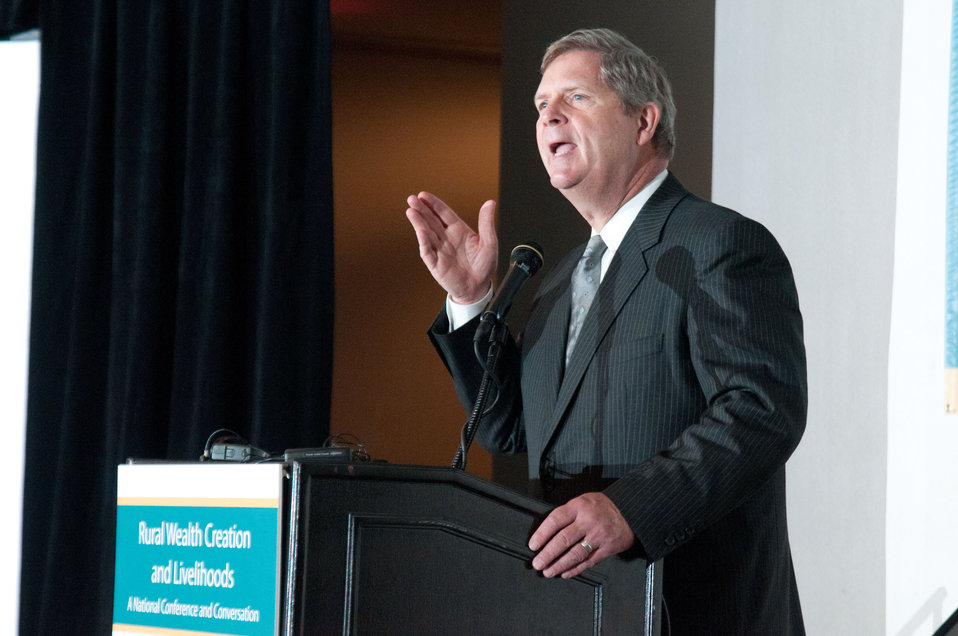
U.S. Department of Agriculture (USDA) Secretary Tom Vilsack responded to several questions following his keynote address to the Rural Wealth Creation and Livelihoods national conference for practitioners, researchers and policymakers, held at the Dupont Hotel, Washington DC, on Monday October 3, 2011. USDA partnered with the Ford Foundation to sponsor the conference.